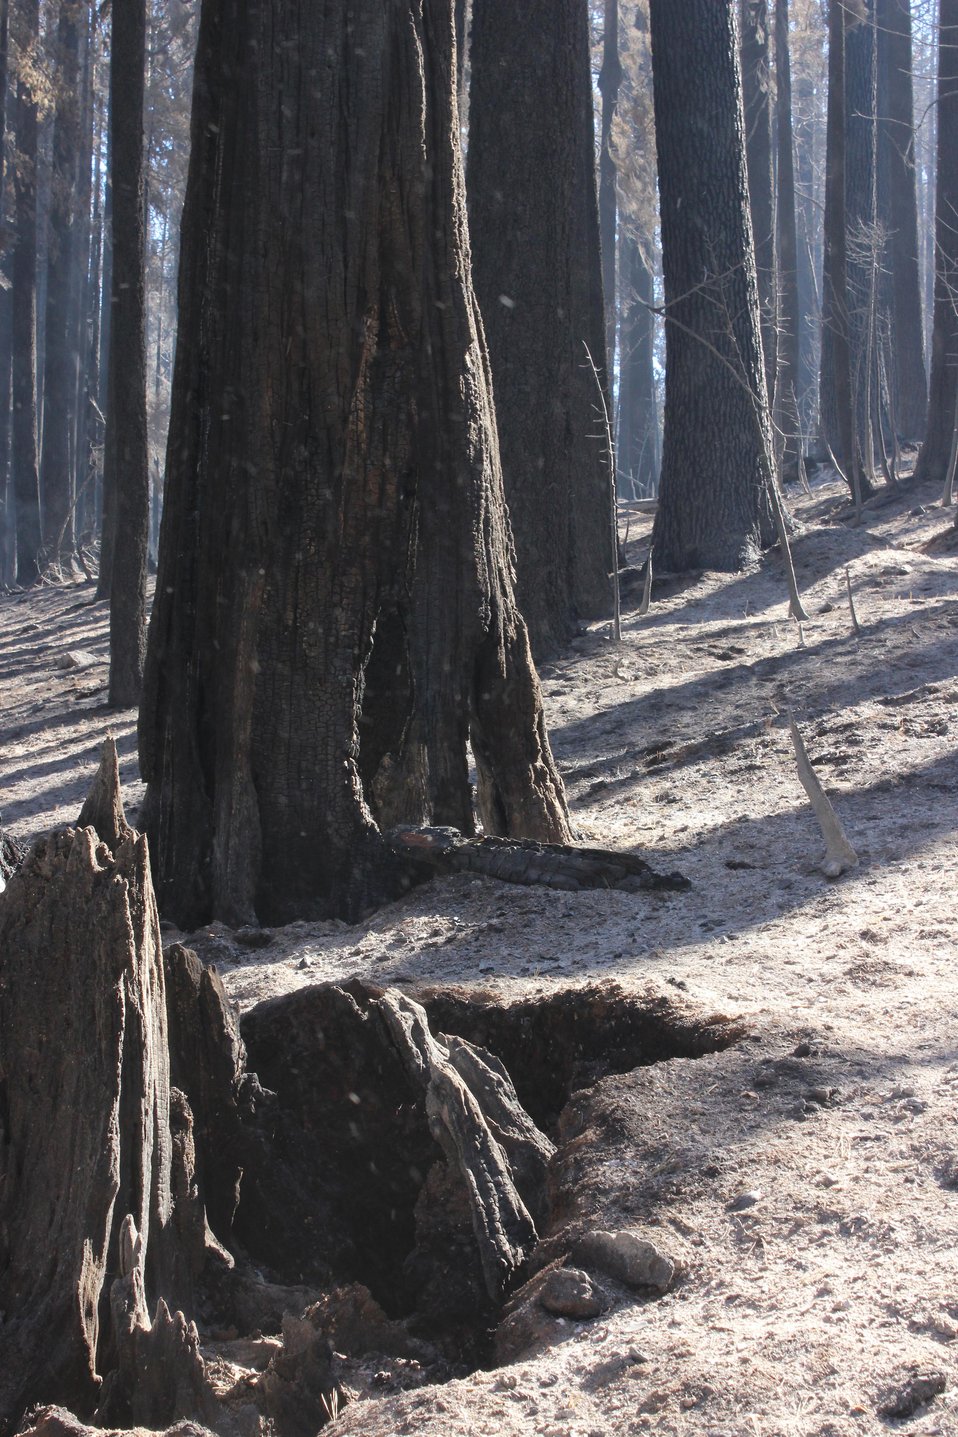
Burned trees and ash covered forest floor show the devastation caused by the Rim Fire. The Rim Fire in the Stanislaus National Forest near in California began on Aug. 17, 2013 and is under investigation. The fire has consumed approximately 253,332 acres and is 80% contained.